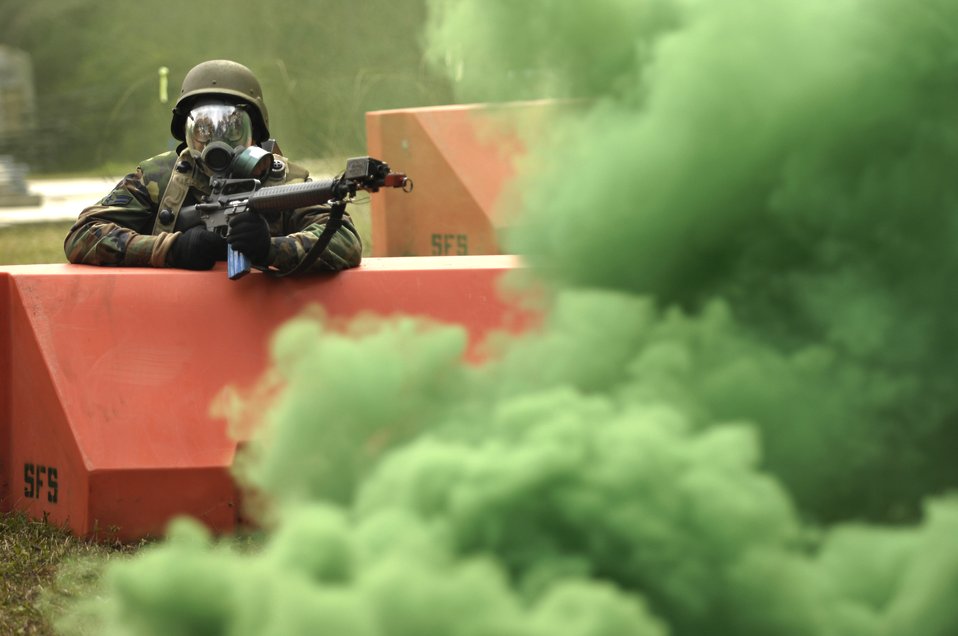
Testing their skills

Airman 1st Class Lee Olson dons a gas mask during a simulated gas attack while participating in the Expeditionary Combat Skills Training Dec. 7 at Charleston Air Force Base, S.C. The ECST is a three-day tactical operations course to prepare Charleston Airmen for future deployments. Airman Olson is with the 437th Medical Group.